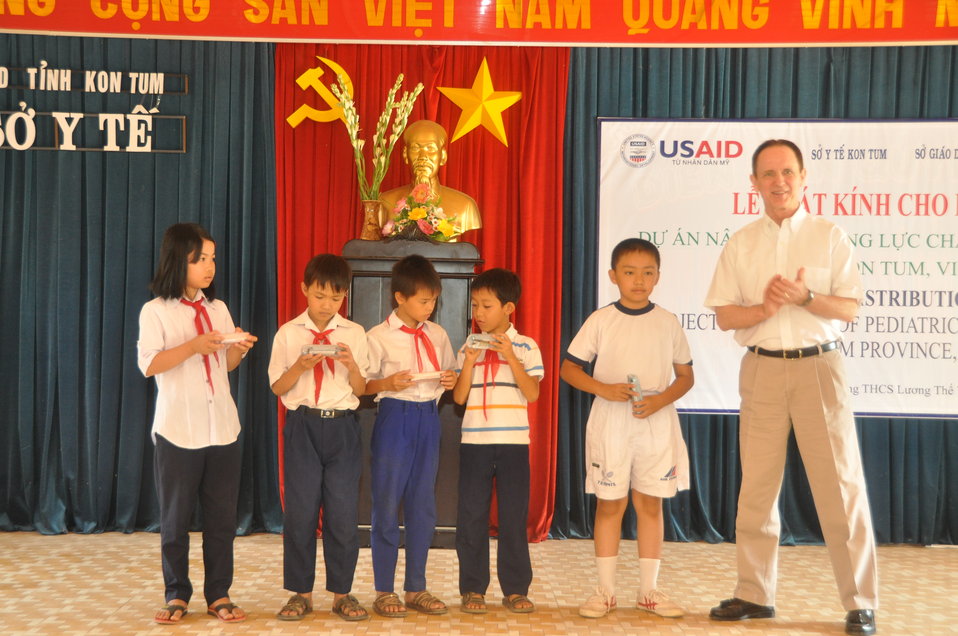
School children in Dak To, Kon Tum Province, receive eyeglasses under a program supported by USAID and partners HKI and World Learning